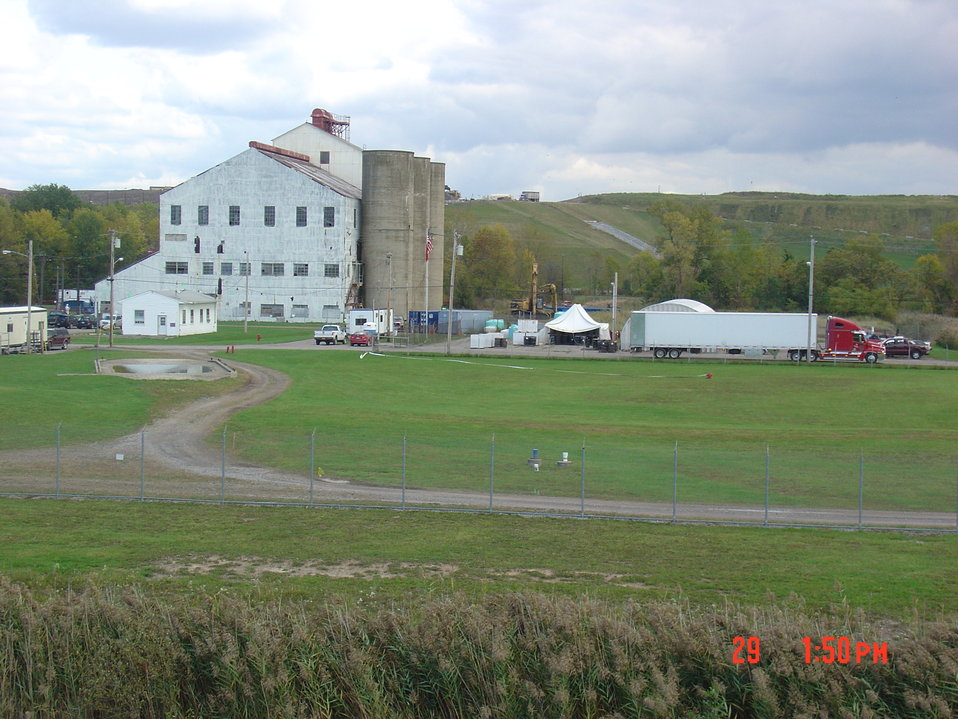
NFSS BUILDING 401 PRE- DEMOLITION

Activities from the Niagara Falls Storage Site, which is associated with the former Lake Ontario Ordnance Works. Formerly Utilized Sites Remedial Action Program (FUSRAP), a program initiated in 1974 to identify, investigate and clean up or control sites that were part of the Nation's early atomic energy and weapons program. Activities at the sites that are eligible for FUSRAP were conducted by Manhattan Engineer District (MED) or the Atomic Energy Commission (AEC), both predecessors of the Department of Energy (DOE). The U.S. Army Corps of Engineers was assigned management of FUSRAP by Congress in 1997.